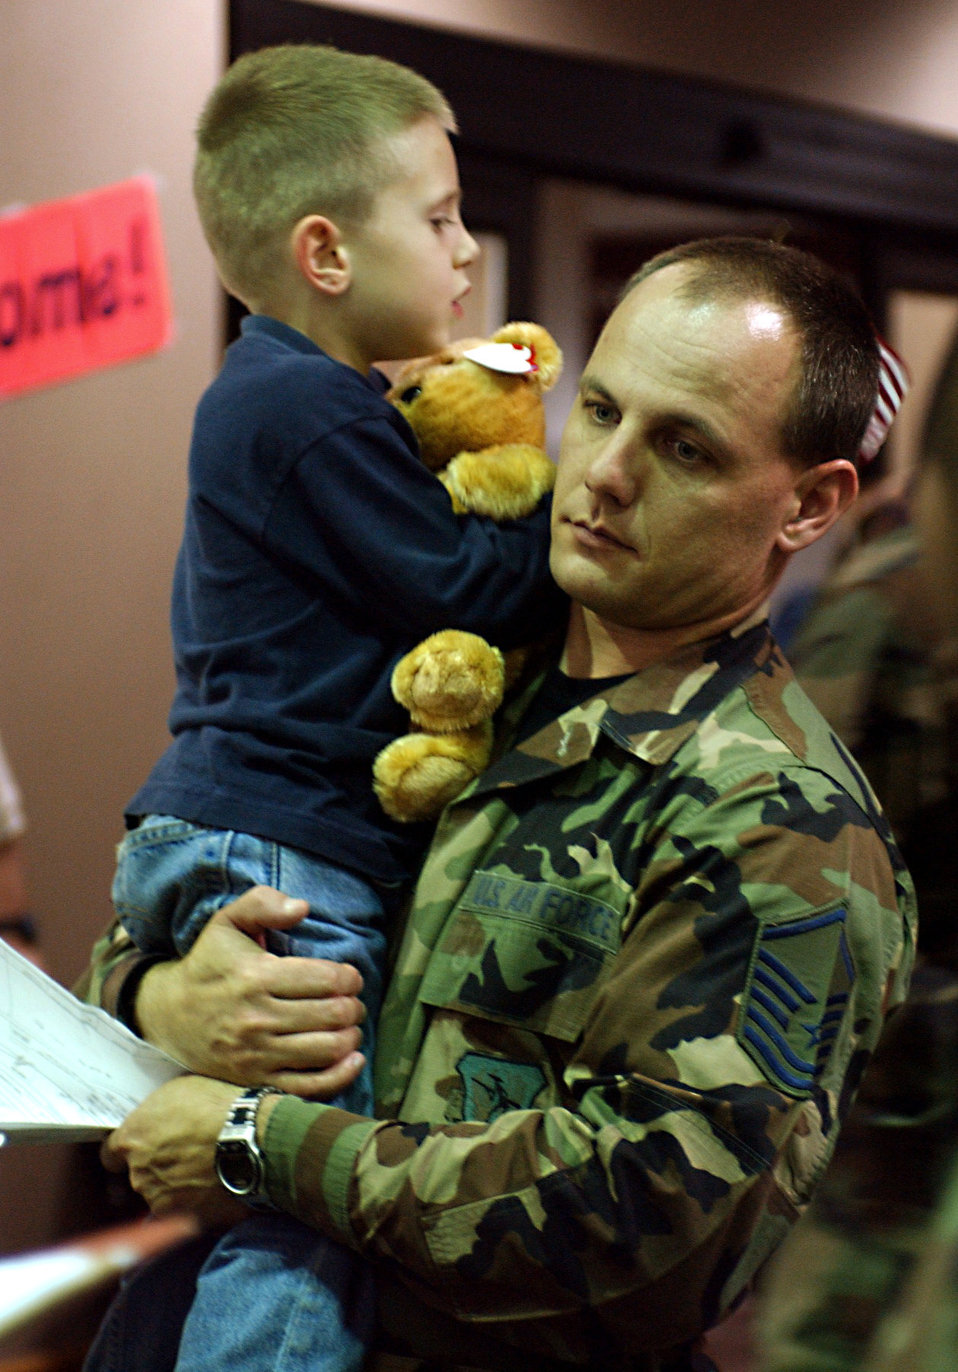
Leaving Town

CHARLESTON AIR FORCE BASE, S.C. (AFPN) -- Master Sgt. Steven Foster, a 437th Mission Support Squadron Air Force Aid officer, helps a young family member from Incirlik Air Base, Turkey. More than 1,300 Air Force family members and nonmission-essential civilian employees from the base arrived at Charleston International Airport, S.C., on March 21.